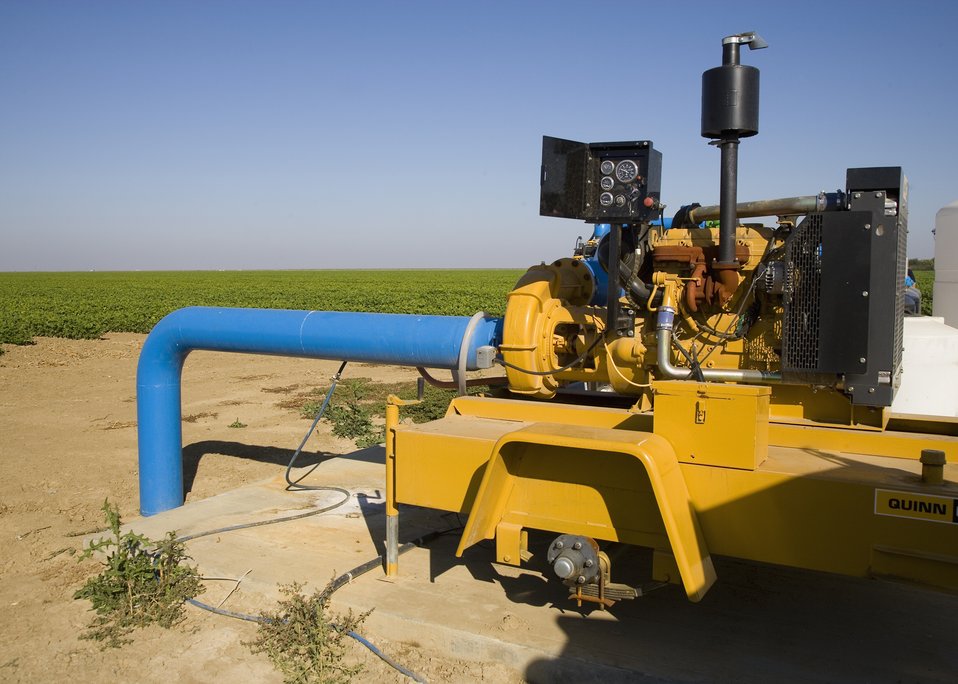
Tier 3 diesel motor and pump for air quality. California.